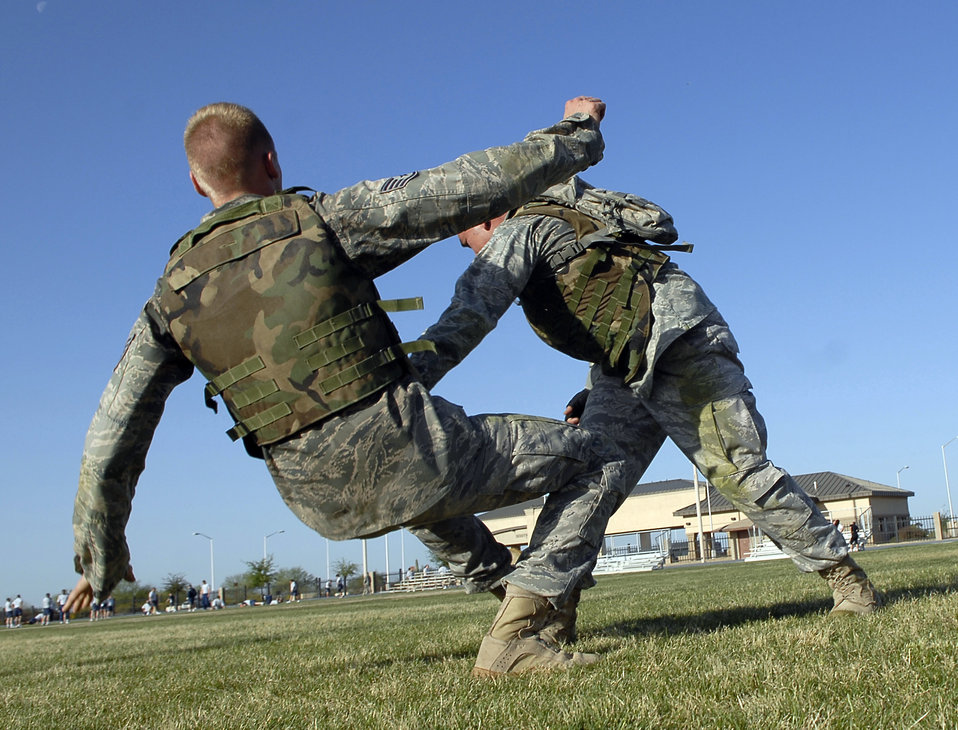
Luke Airmen train for combat

Staff Sgt. Anthony Cubillo (right) throws Staff Sgt. Matthew Sulack to the ground during a military combative training course April 5, 2010, at Luke Air Force Base, Ariz. The techniques learned during this course provide an opportunity for Airmen to progress to a tan, gray, or even green belt in martial arts. Sergeant Cubillo is a 56th Maintenance Operations Squadron weapons systems coordinator. Sergeant Sulack is a 61st Aircraft Maintenance Squadron crew chief.